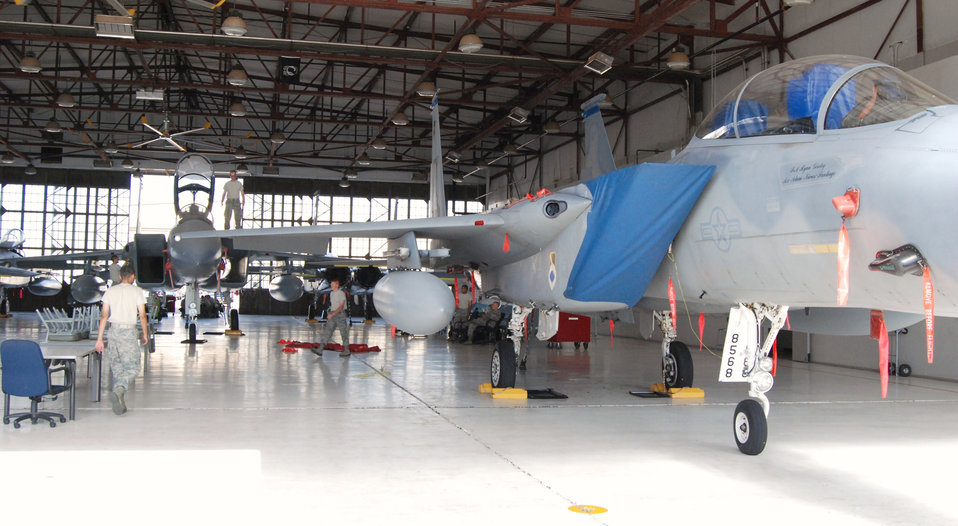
Newer F-15s

An F-15D Eagle (front) is parked in a training hangar July 23, 2010, at Sheppard Air Force Base, Texas, to be used for training F-15 aircraft maintenance students on the latest equipment and controls of an F-15 jet.